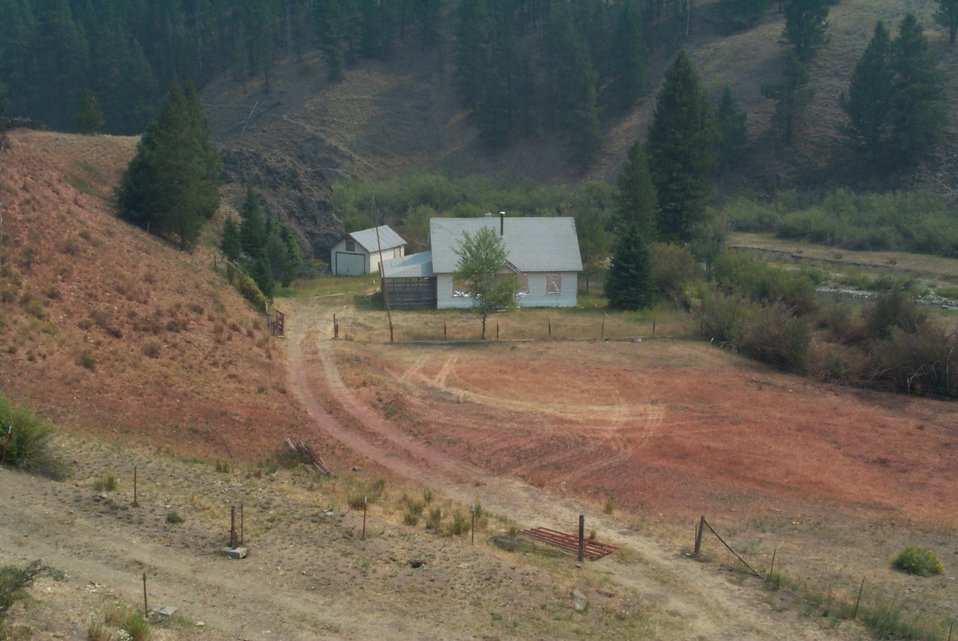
Fire retardant measures Urban interface Fire Clearwater Fire Salmon Field Office USRD Upper Snake River District